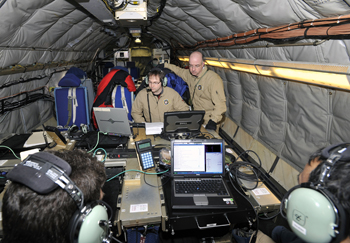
Improved airborne comm

MIT Lincoln Laboratory engineers Chayil Timmerman (left) and John Murphy conduct an airborne test March 25, 2010, as part of the High Data Rate Airborne Terminal Program. The team used a 707 test bed aircraft to test out the transmission capabilities of a prototype waveform developed as part of the program.